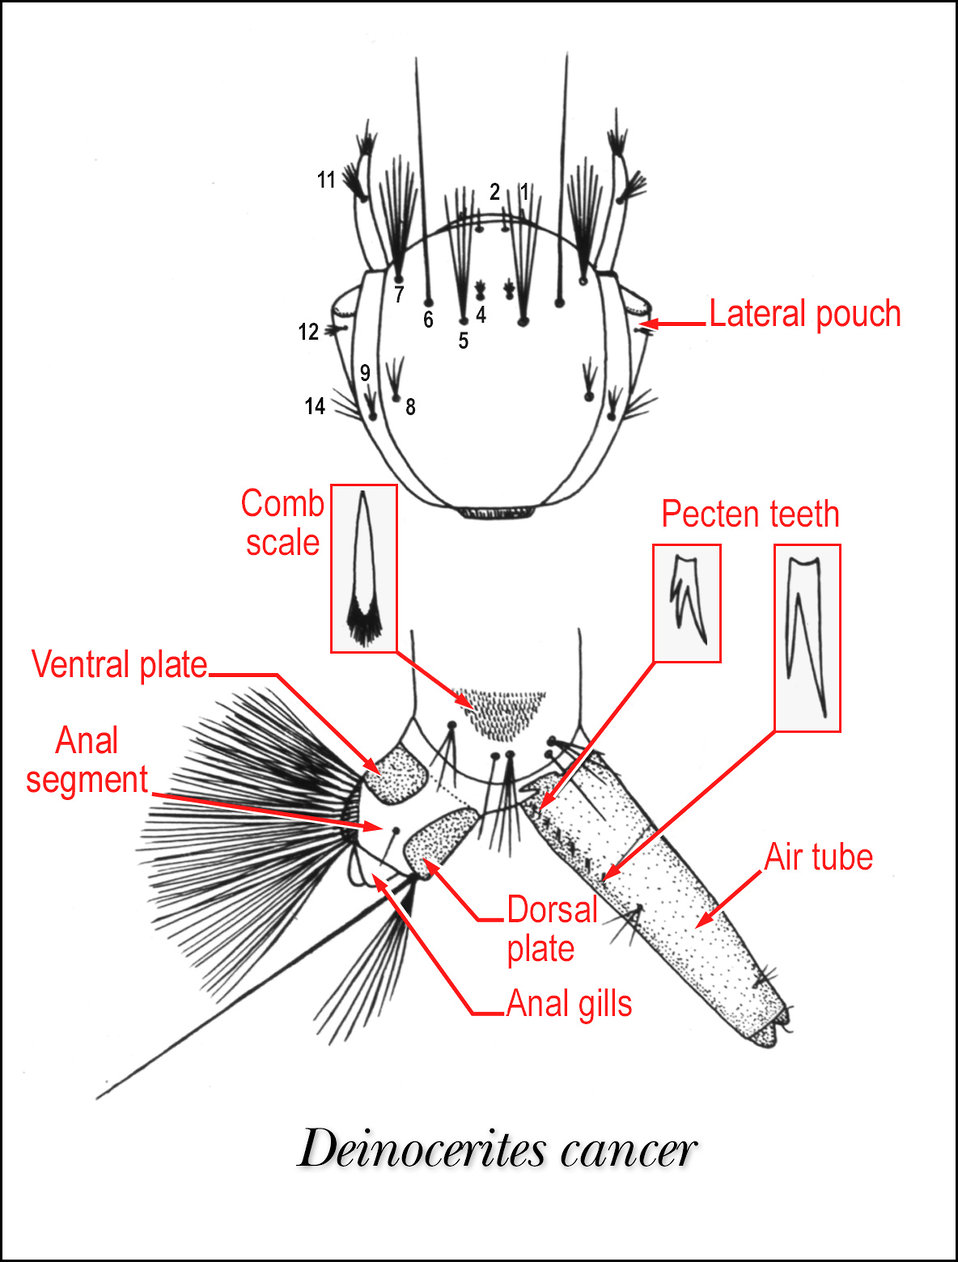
This illustration reveals some of the morphologic details found in the mosquito species Deinocerites cancer.